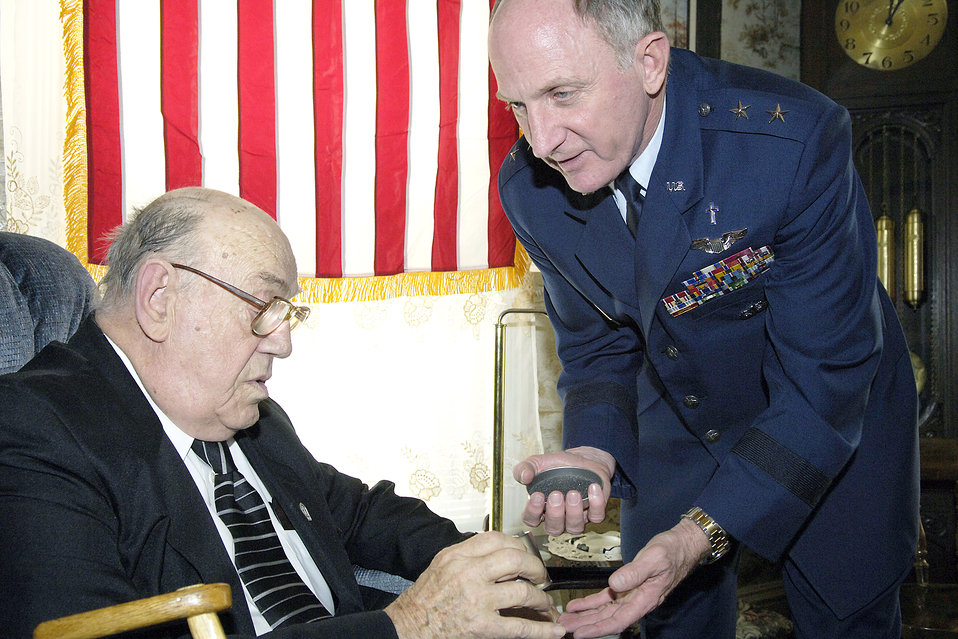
Air Force posthumously awards Bronze Star

BREWER, Maine -- Chaplain (Maj. Gen.) Charles C. Baldwin (right) posthumously presents the Bronze Star to Staff Sgt. Merle Y. Strang on Sept. 27. Accepting the medal on his brother's behalf is the Rev. Homer Strang. Sergeant Strang was awarded the Bronze Star for his participation in the Korean War's Kiddie Car Airlift, where he was credited for saving the lives of 950 orphans and 100 orphanage staff members. Chaplain Baldwin is the Air Force Chaplain Service chief.